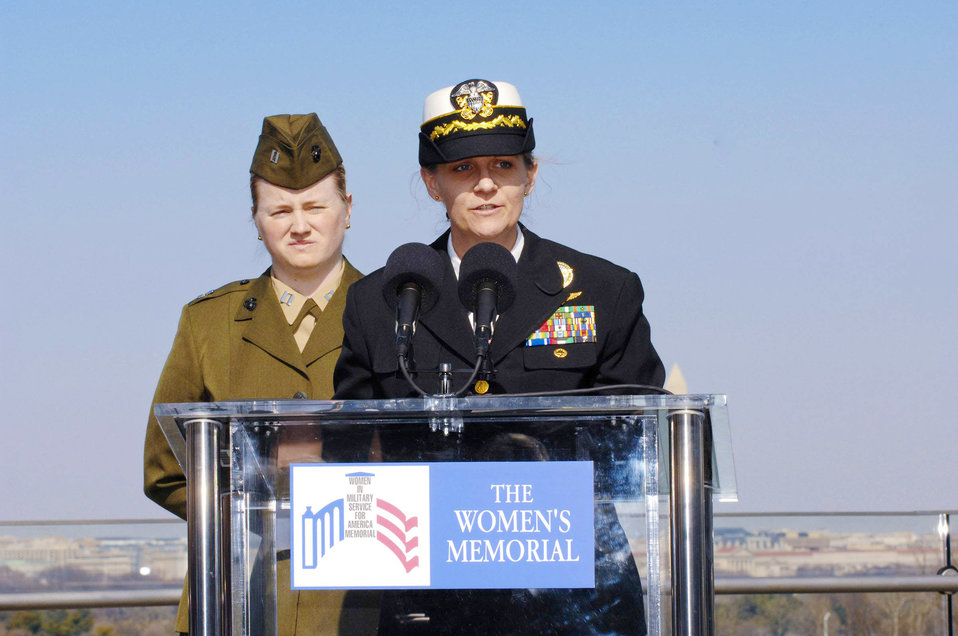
Female World War II pilots lay wreath at Air Force Memorial

Navy Cmdr. Heidi Fleming (front) and Marine Corps Capt. Katherine Horner read the names of 38 Women Airforce Service Pilots members who perished during World War II while serving the Army Air Forces March 9, 2010 in Arlington, Va.